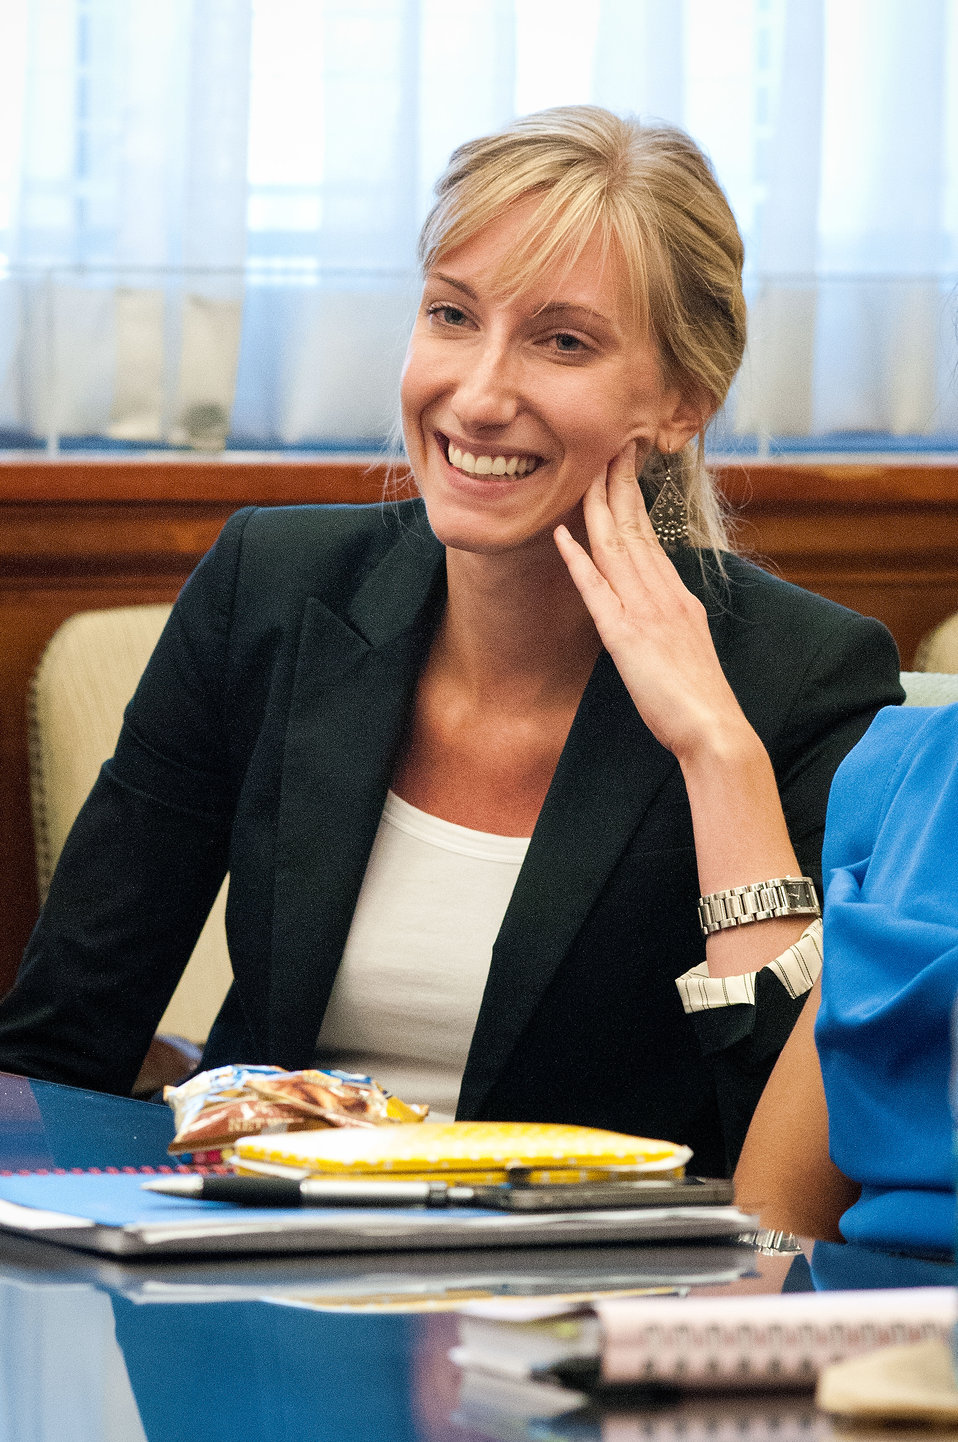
Rebecca Shively, Farm Services Agency had the opportunity with other United States Department of Agriculture employees to discuss the roles they play within the department at a Brown Bag Lunch held with Agriculture Secretary Tom Vilsack in Washington, D.C., on Wednesday, July 25, 2012. Secretary Vilsack holds the occasional Brown Bag Lunches to discuss the role United States Department of Agriculture employees play and to thank them for their dedication and diligence.